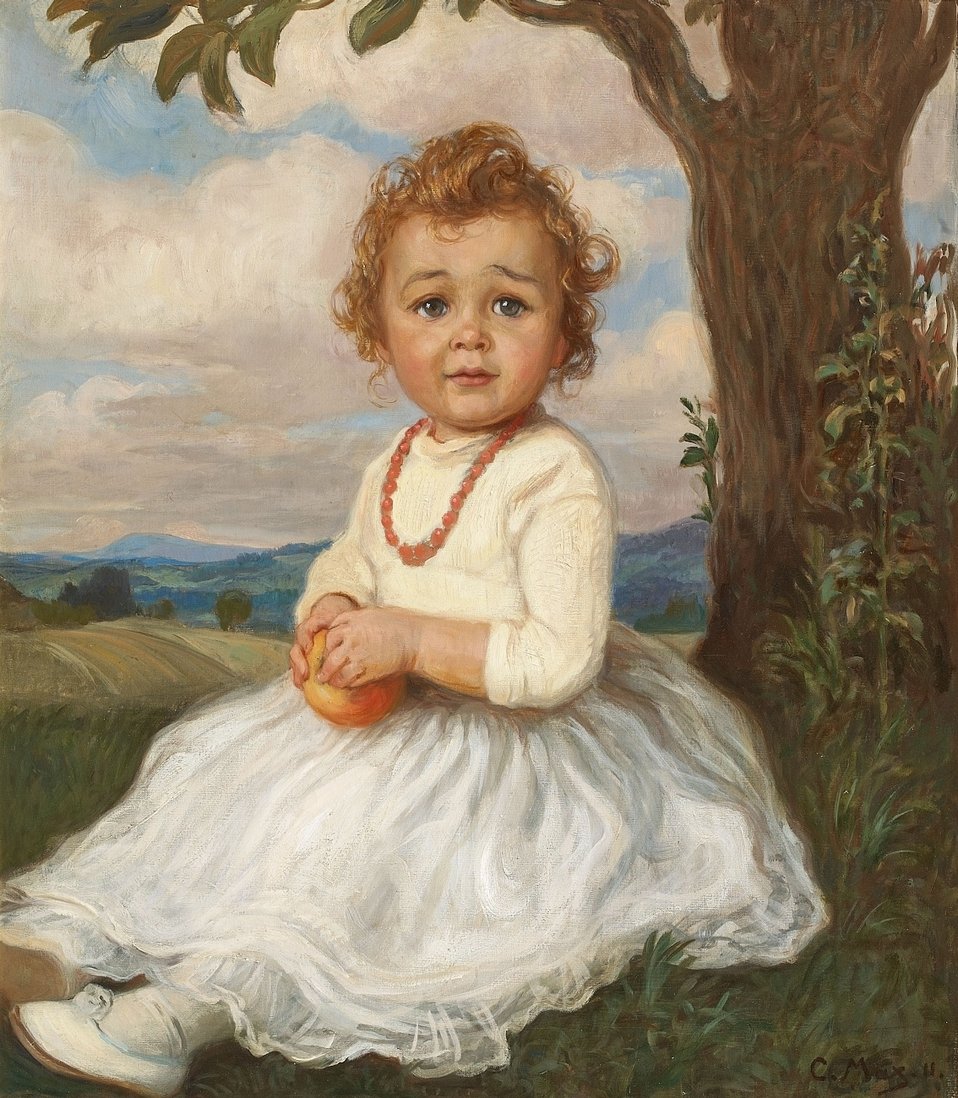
Deutsch: Bildnis eines Mädchens, unter einem Baum sitzend. Signiert und datiert unten rechts: C. Max. 11. Öl auf Leinwand. 73 x 64 cm